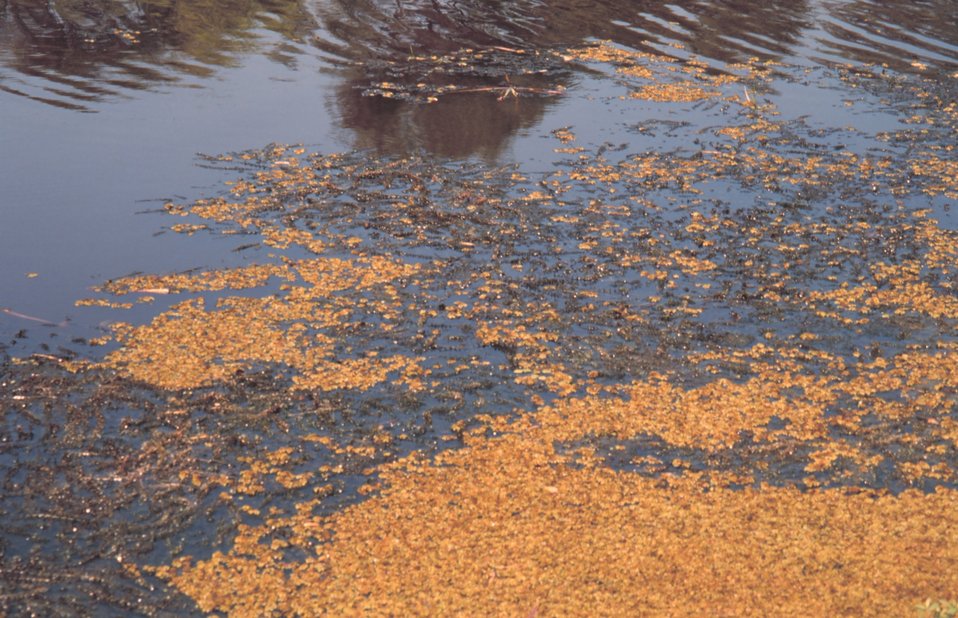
Submerged aquatic vegetation within a pond in the Mississippi Delta